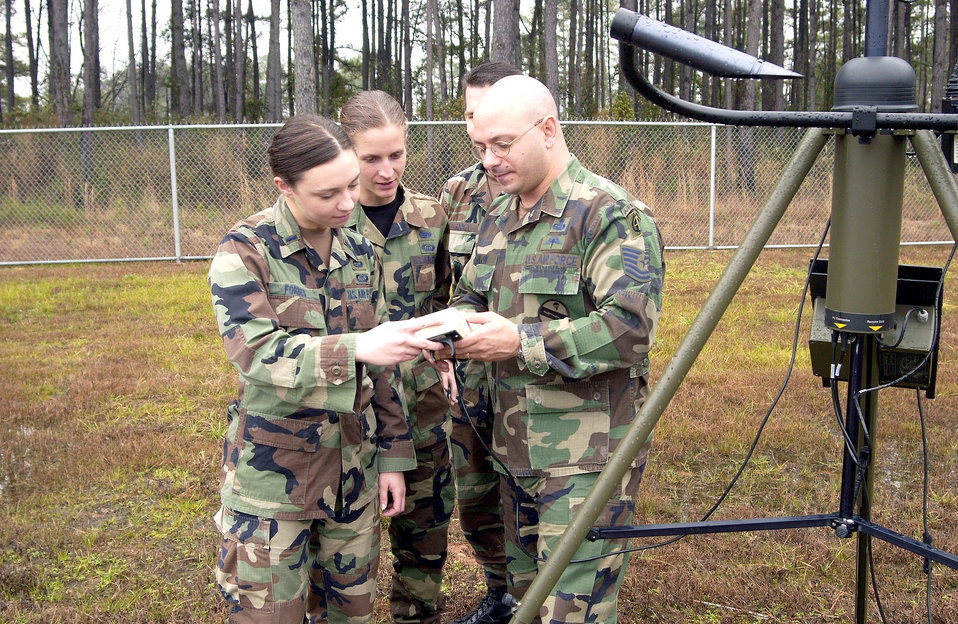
Women weather down stereotypes

First Lt. Alexia Forbes and Senior Airman Jackie Miller train with fellow combat weatherman at the 18th Air Support Operations Group at Pope Air Force Base, N.C.